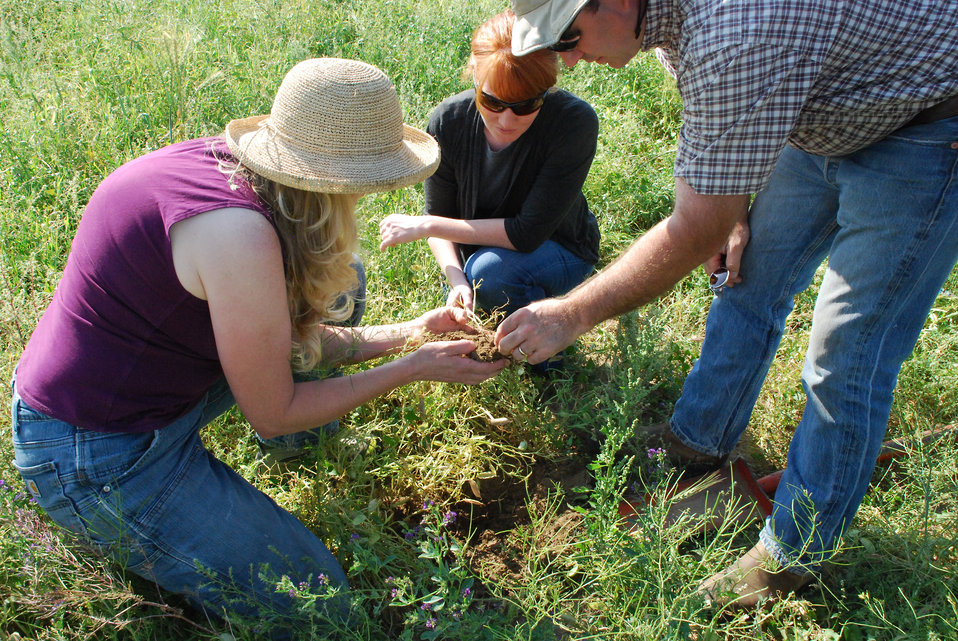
Organic 004

Vilicus Farms owners Anna Jones-Crabtree and Doug Crabtree discuss soil health with U.S. Department of Agriculture (USDA) Natural Resource Conservation Service (NRCS) Soil Conservationist Amy Kaiser in Havre, MT.